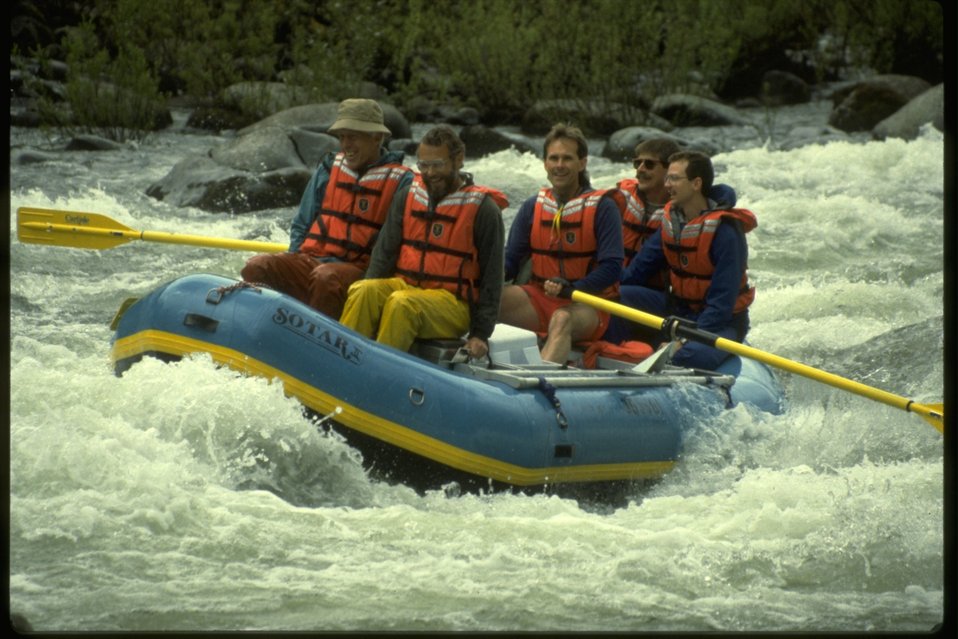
Rafting down the Sandy River.